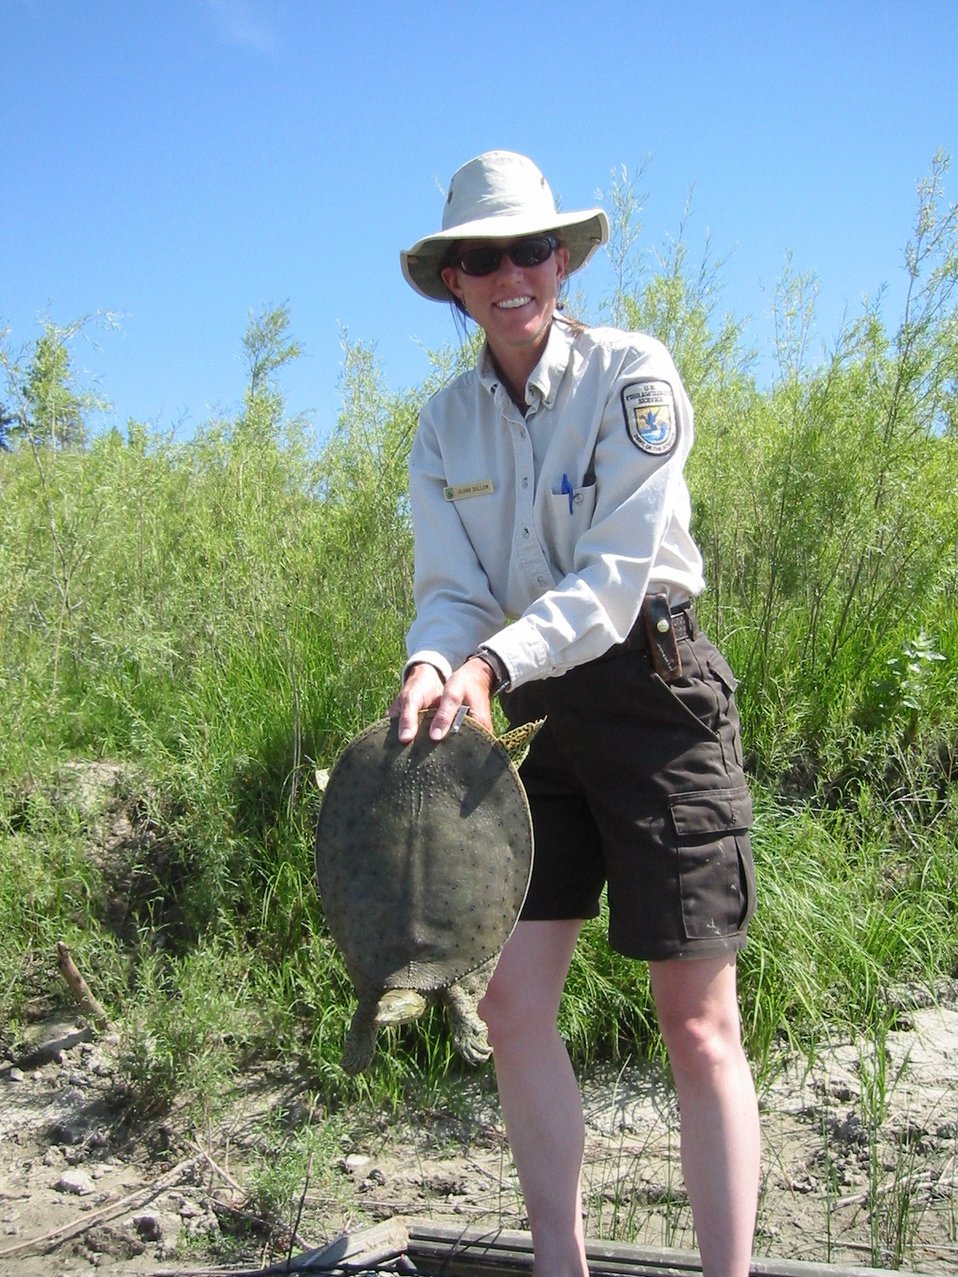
Spiny Softshell Turtle Monitoring

Jo Ann Dullum, USFWS biologist, assists with a spiny softshell turtle survey on the Missouri River.